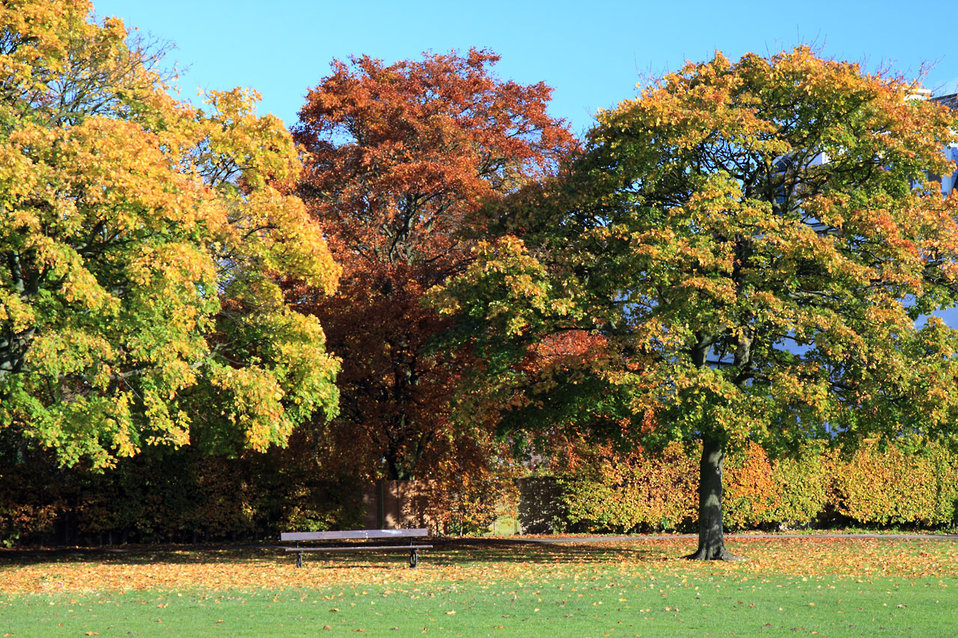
Three trees

Three colored trees in the park.